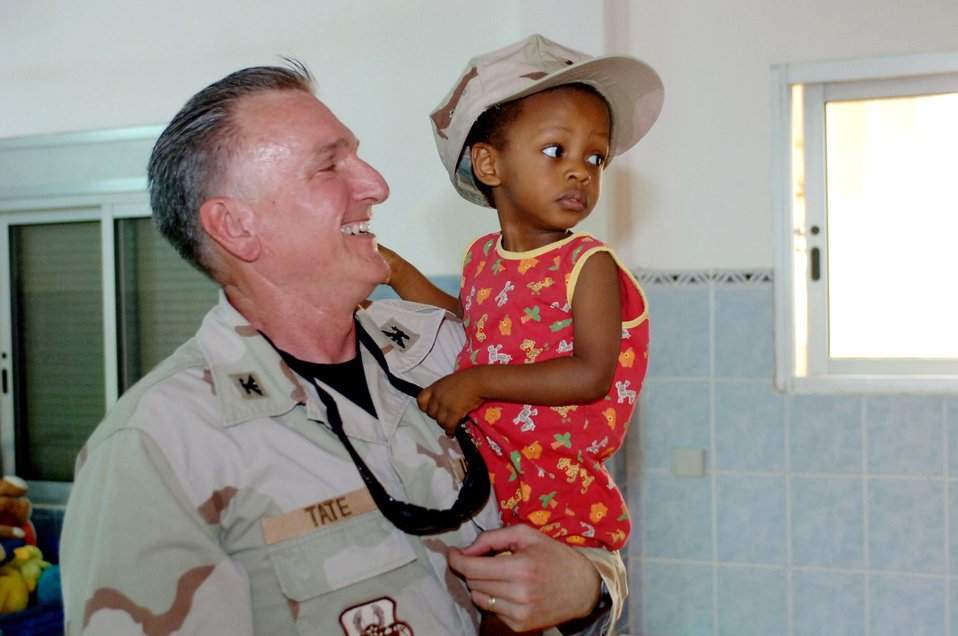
CENTAF chaplain visits Djibouti orphanages

Chaplain (Col.) Gregory Tate surrenders his cover to a child during his July 13 visit to the baby orphanage near Camp Lemonier in Djibouti. Chaplain Tate, the U.S. Central Air Forces Command chaplain, visited Djibouti as part of his Central Command area of operation tour, observing Air Force chaplain services and religious support teams.